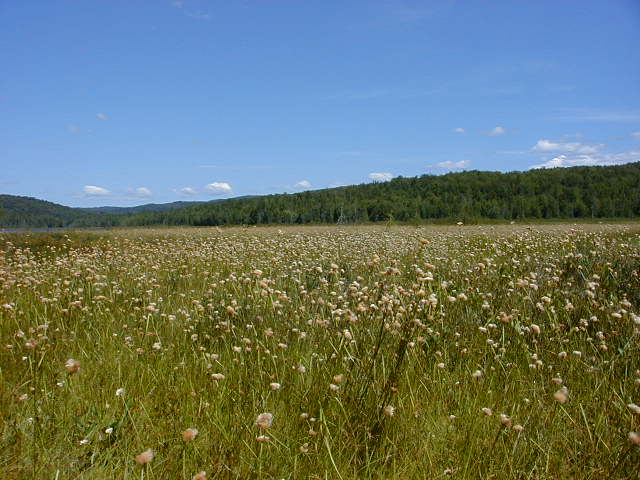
Umbagog National Wildlife Refuge - Cottongrass in Harper's Meadow